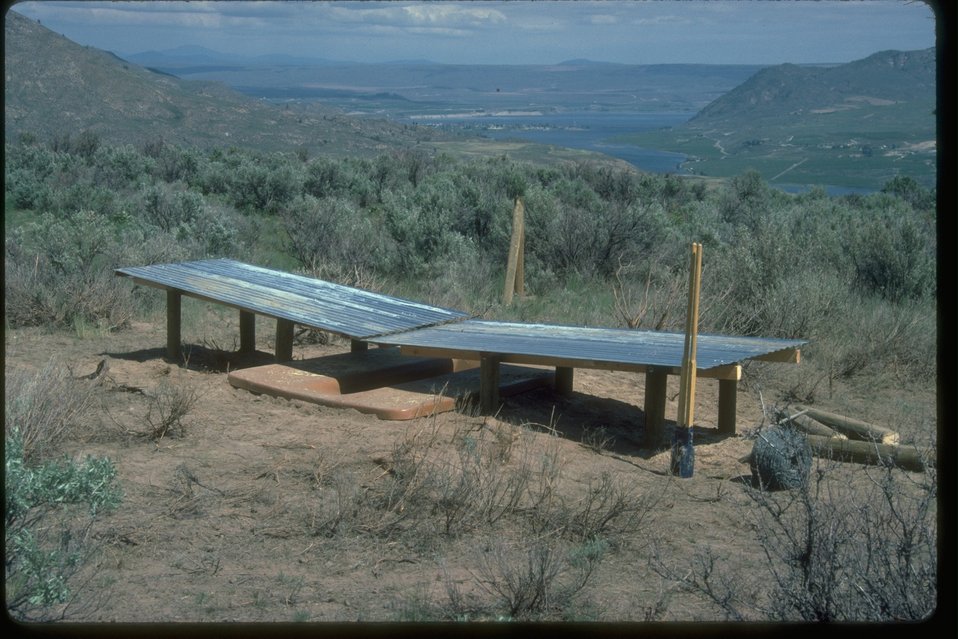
Guzzler catches rainfall to provide water for wildlife near Pateros, Washington.